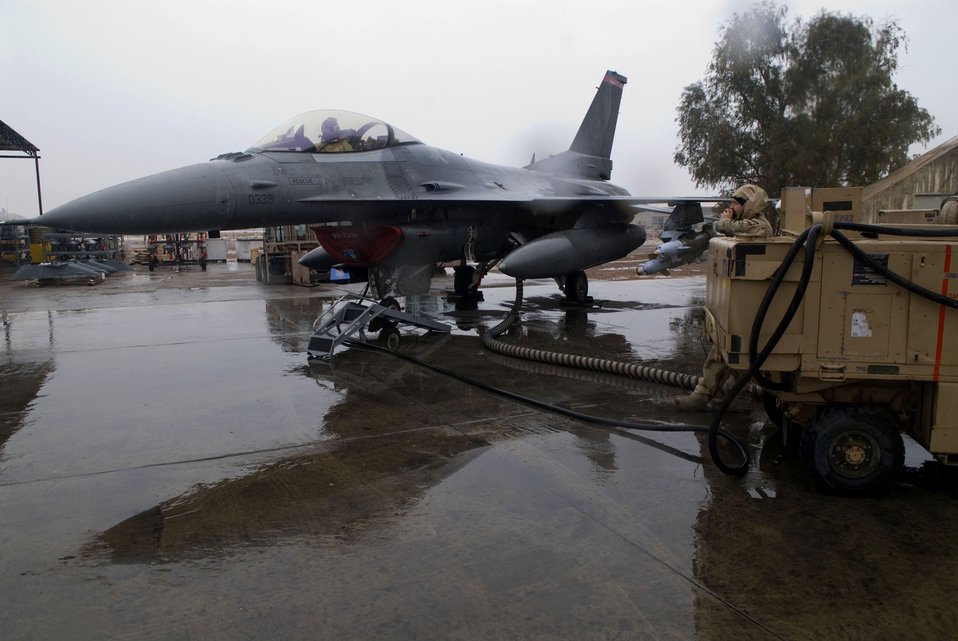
Through snow and rain

Staff Sgt. Jeremy Crombie talks to Senior Airman Trevor Scott via radio headsets during a Global Positioning System test for a F-16 Fighting Falcon Jan. 11 at Balad Air Base, Iraq. The daily test ensures the system is working properly. Sergeant Crombie and Airman Scott are 332nd Expeditionary Aircraft Maintenance Unit avionics technicians deployed from Spangdahlem Air Base, Germany.